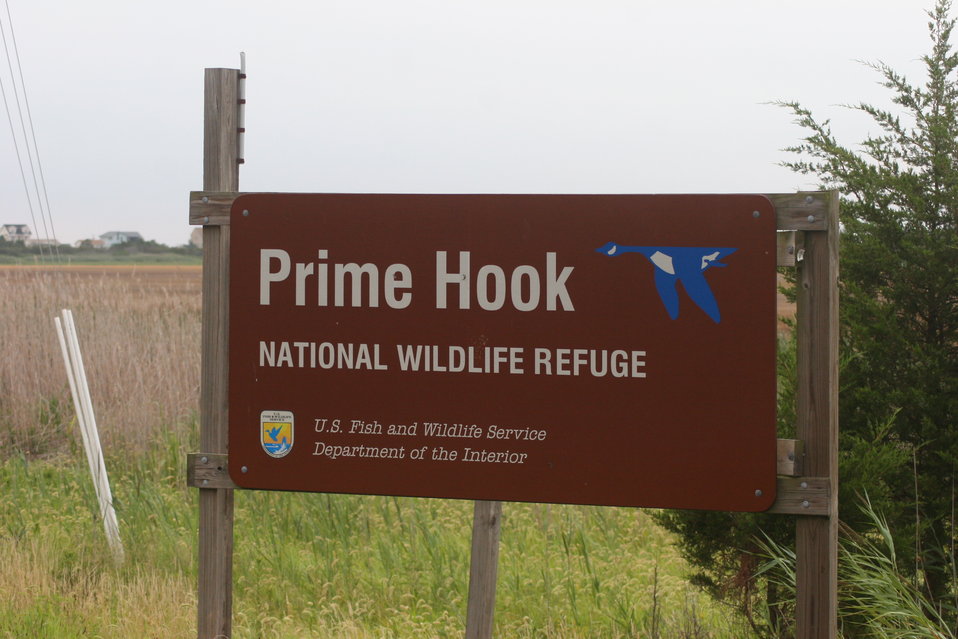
Prime Hook NWR